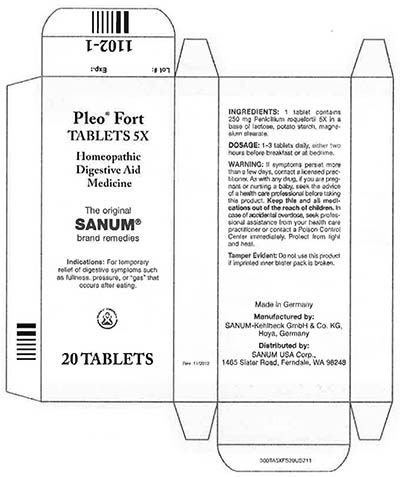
RECALLED – Homeopathic Drug Products

March 18, 2014 – Product Recall – Terra-Medica Issues Voluntary Nationwide Recall of Specified Lots of Pleo Homeopathic Drug Products Due to the Potential for Undeclared Penicillin.